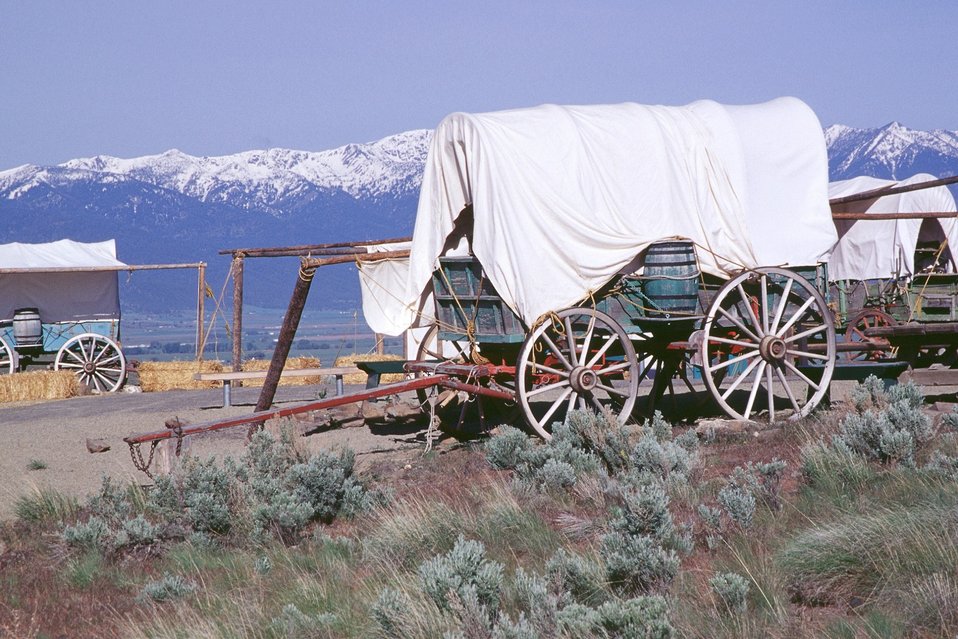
NHOTIC 10th Anniversary, wagon train reenactment. Encampment on the Oregon Trail.